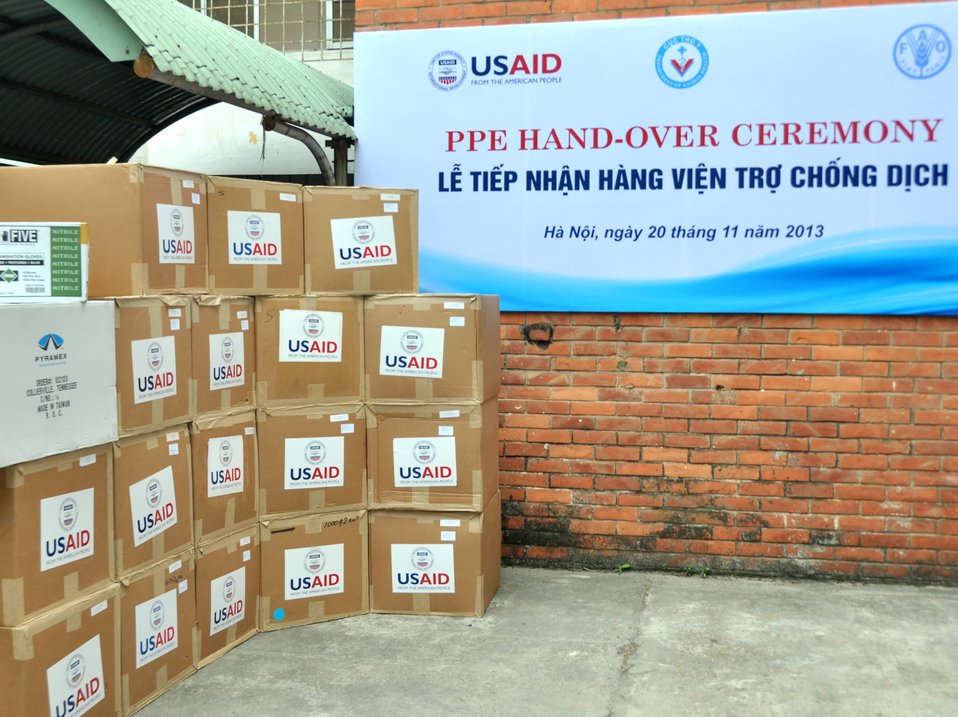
USAID hands over personal protective equipment to the Department of Animal Heath under Vietnam’s Ministry of Agriculture and Rural Development.

Hanoi, November 20, 2013.